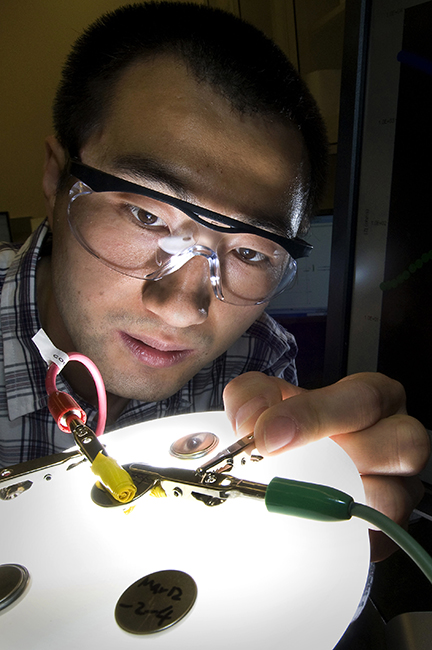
The Materials Synthesis and Characterization Facility at BNL Center for Functional Nanomaterials includes labs devoted to producing nanostructured materials and their basic structural, chemical and optical characterization.